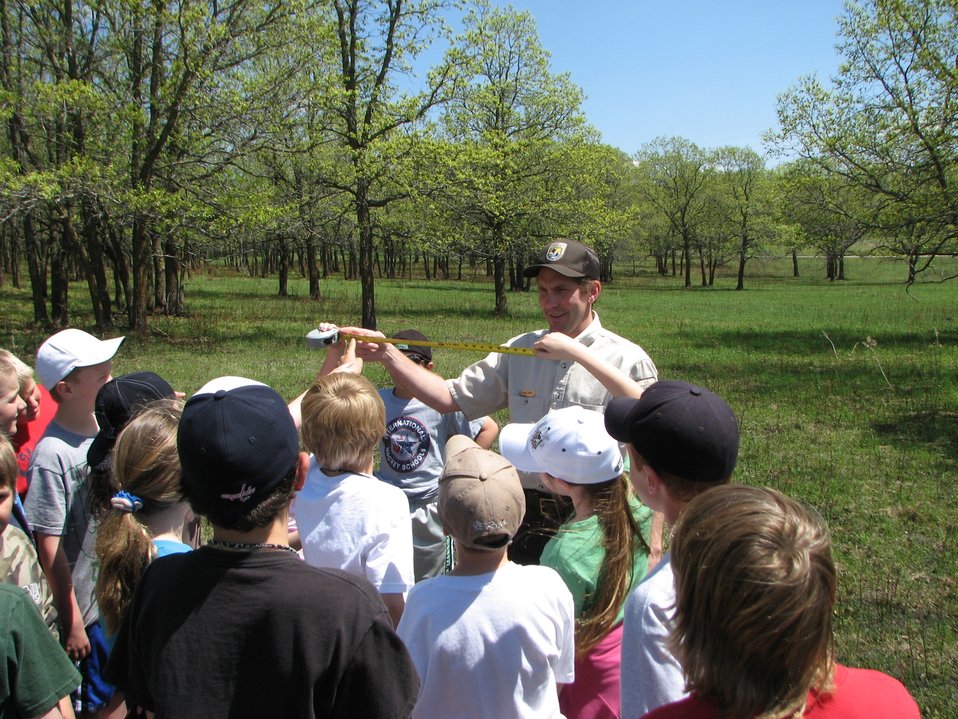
Educating Youth at Sullys Hill National Game Preserve

Refuge Manager Tom Ibsen at Sullys Hill National Game Preserve in North Dakota, teaches students about the depth of plant roots on a recently-burned site.